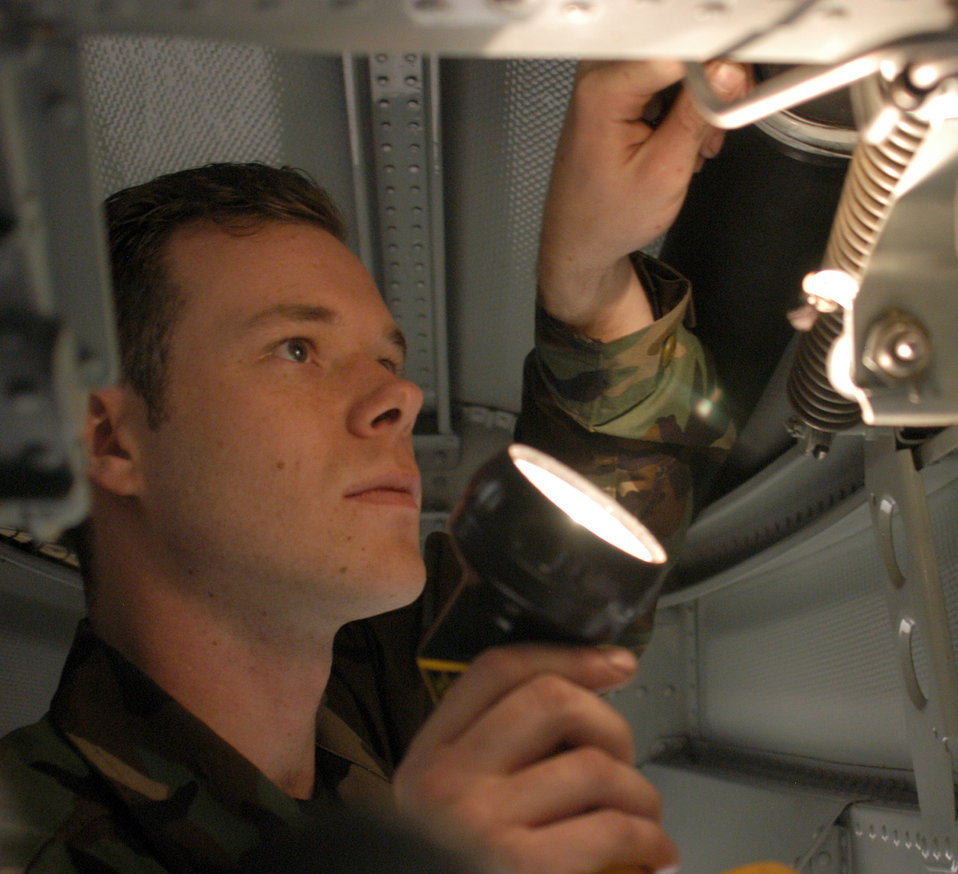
Reconstituting A-10s

Staff Sgt. Michael Schuler inspects the left main wheel well of an A-10 Thunderbolt II Nov. 5 during a phase inspection following the return of the aircraft from a four-month deployment to Afghanistan. Sergeant Schuler is a crew chief with the 442nd Maintenance Squadron at Whiteman Air Force Base, Mo.